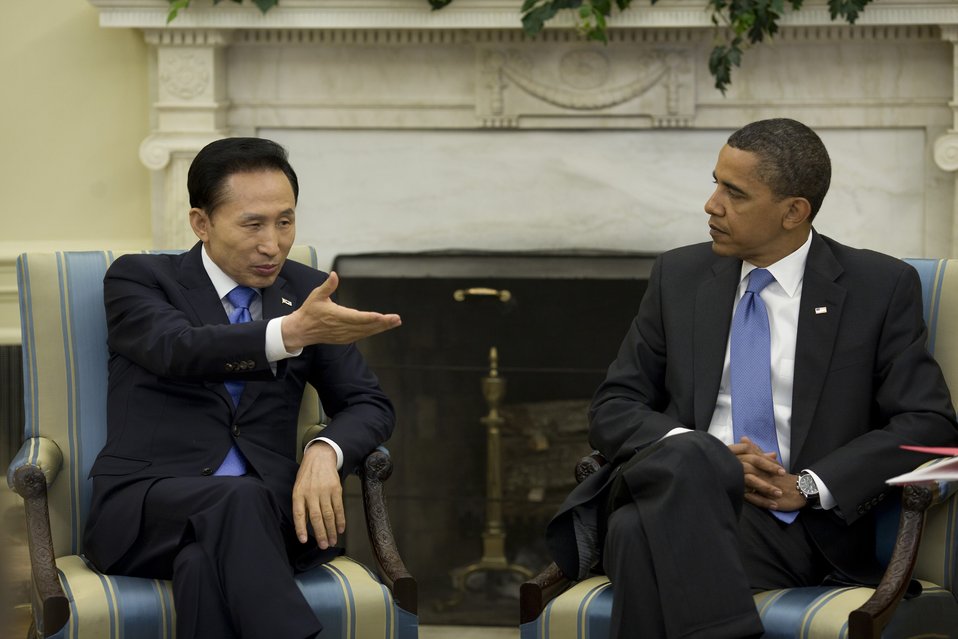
President Barack Obama meets with President Lee Myung-bak of the Republic of Korea in the Oval Office of the White House 6/16/09.